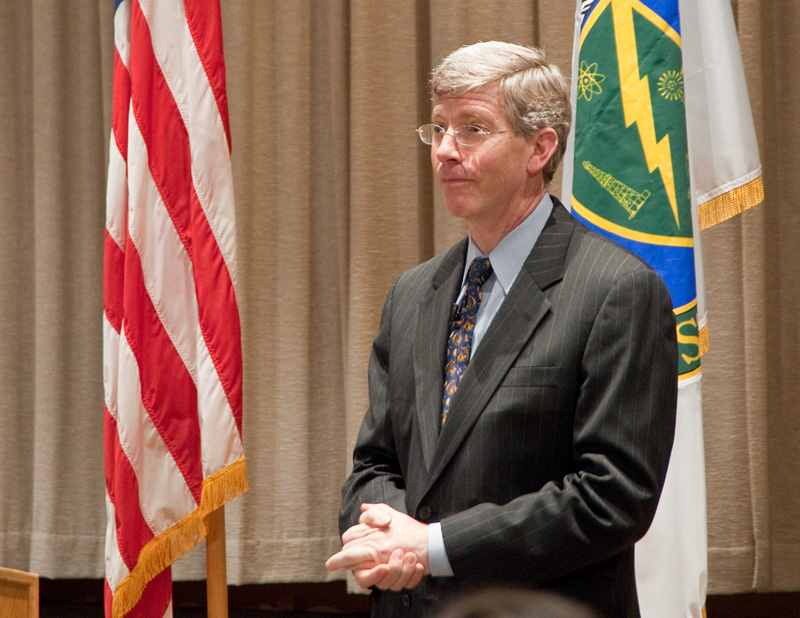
Deputy Secretary Daniel Poneman.